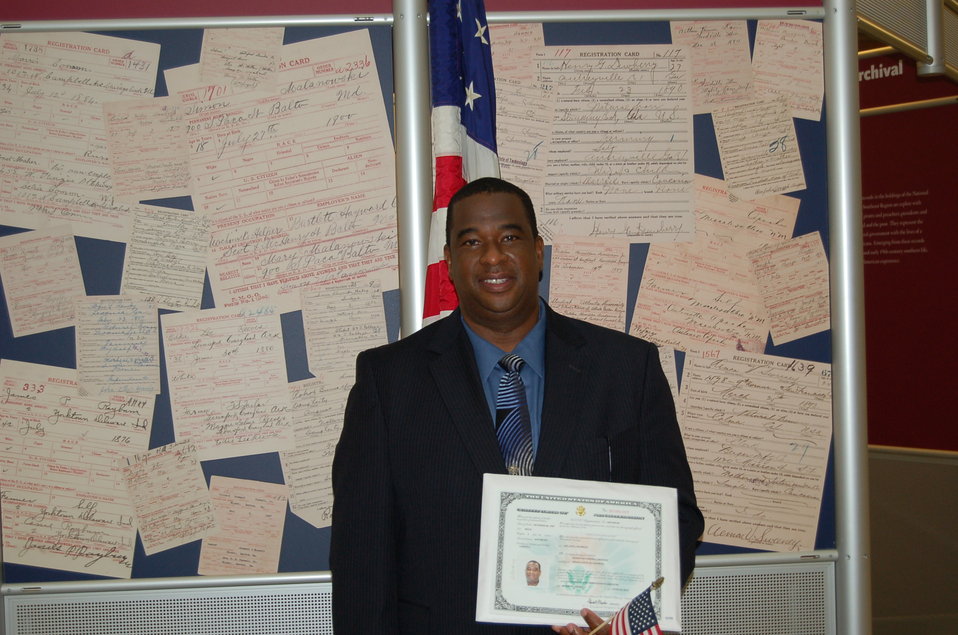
New Citizens